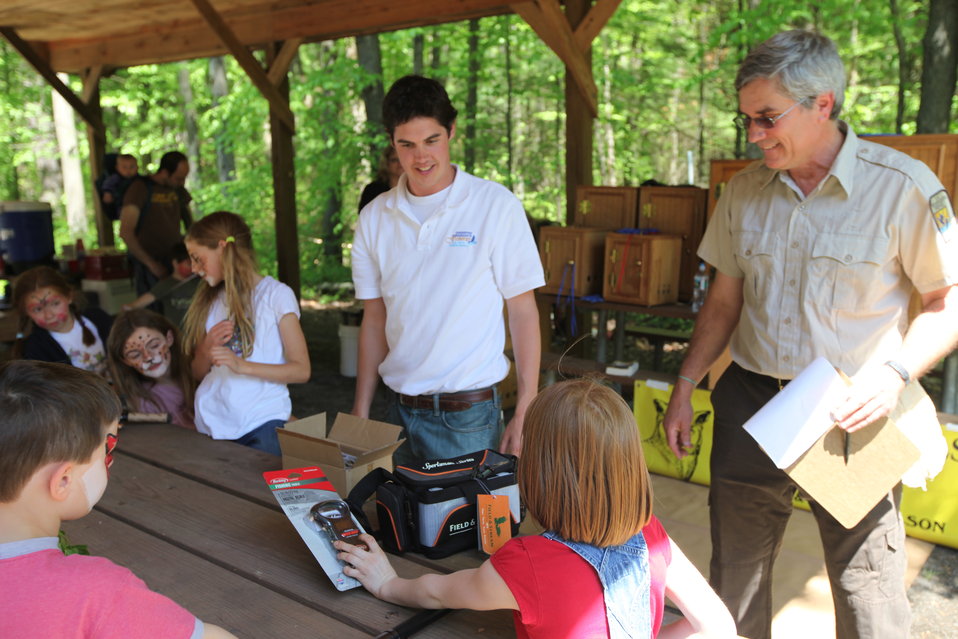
Youth Fishing Derby 2012

Megan Nagel/USFWSv